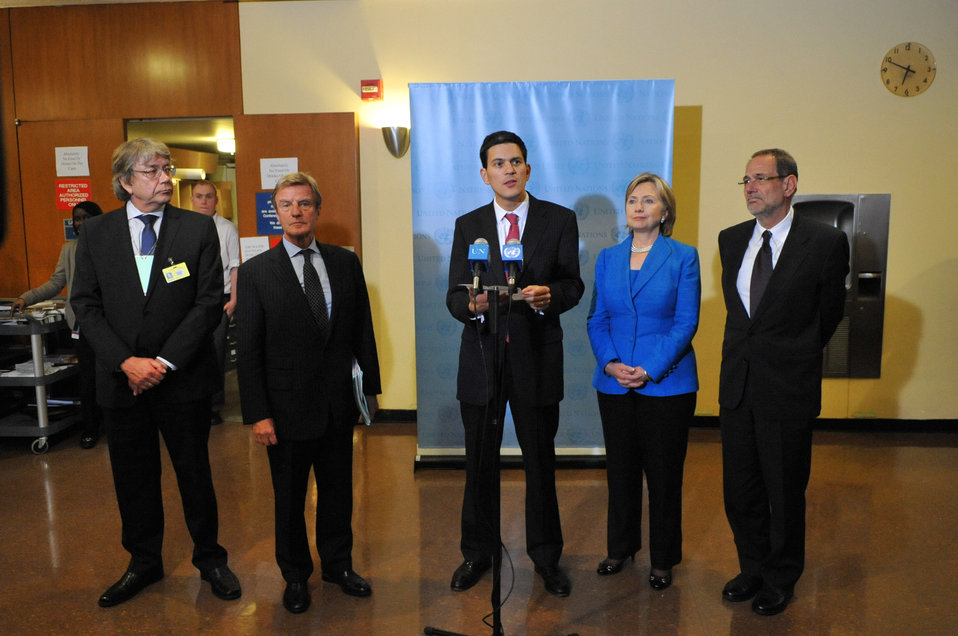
UNGA 2009: Friends of Burma Ministerial

U.S. Secretary of State Hillary Rodham Clinton stands with members of Friends of Burma Ministerial at UN Headquarters at the United Nations headquarters during the 64th Session of the UN General Assembly in New York City, New York September 23, 2009.